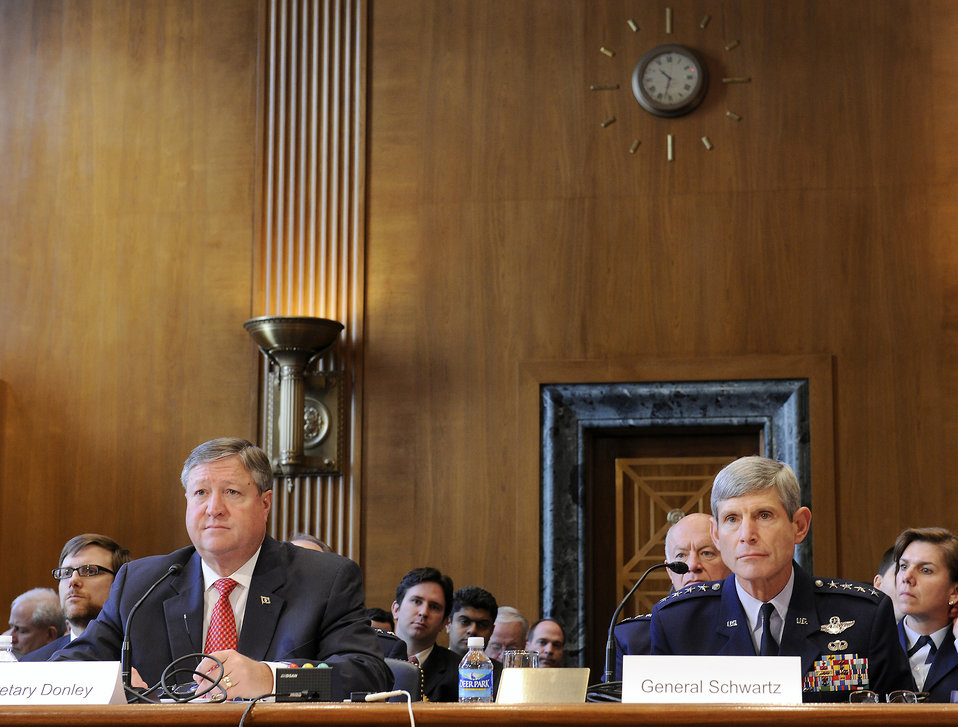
FY 13 budget testimony

Secretary of the Air Force Michael Donley and Air Force Chief of Staff Gen. Norton Schwartz provide testimony about the Air Force’s FY13 budget request before the U.S. Senate Appropriations Subcommittee on Defense on March 14, 2012, in Washington, D.C.